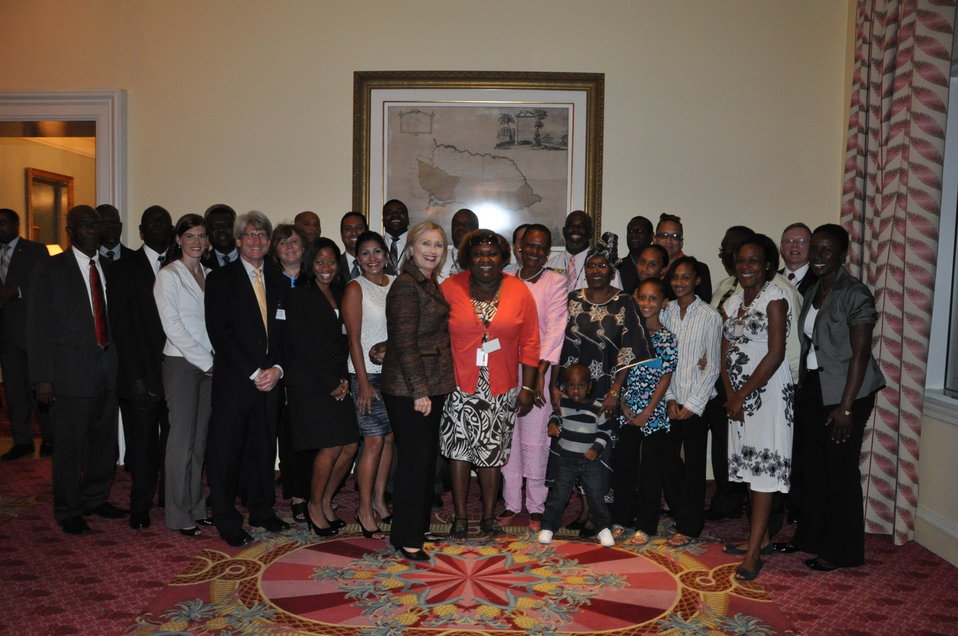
Secretary Clinton Meets With Embassy Jamaica Staff

U.S. Secretary of State Hillary Rodham Clinton meets with Embassy Jamaica staff, including U.S. Ambassador to Jamaica Pamela Bridgewater, in Montego Bay, Jamaica, on June 22, 2011.